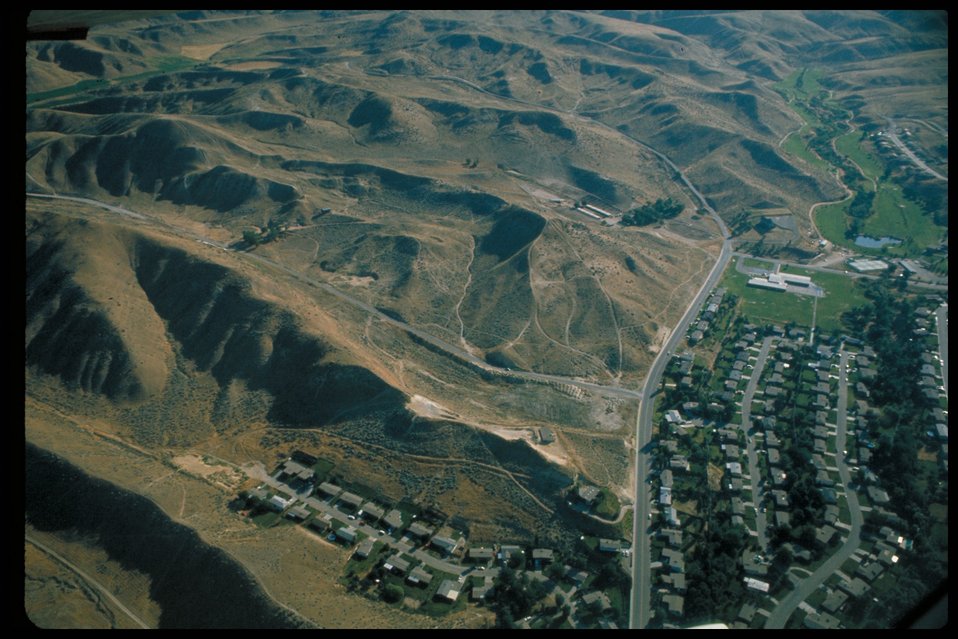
Off Road Vehcile Use Boise Front OHV Off Highway Vehicles Four Rivers Field Office LSRD Lower Snake River District